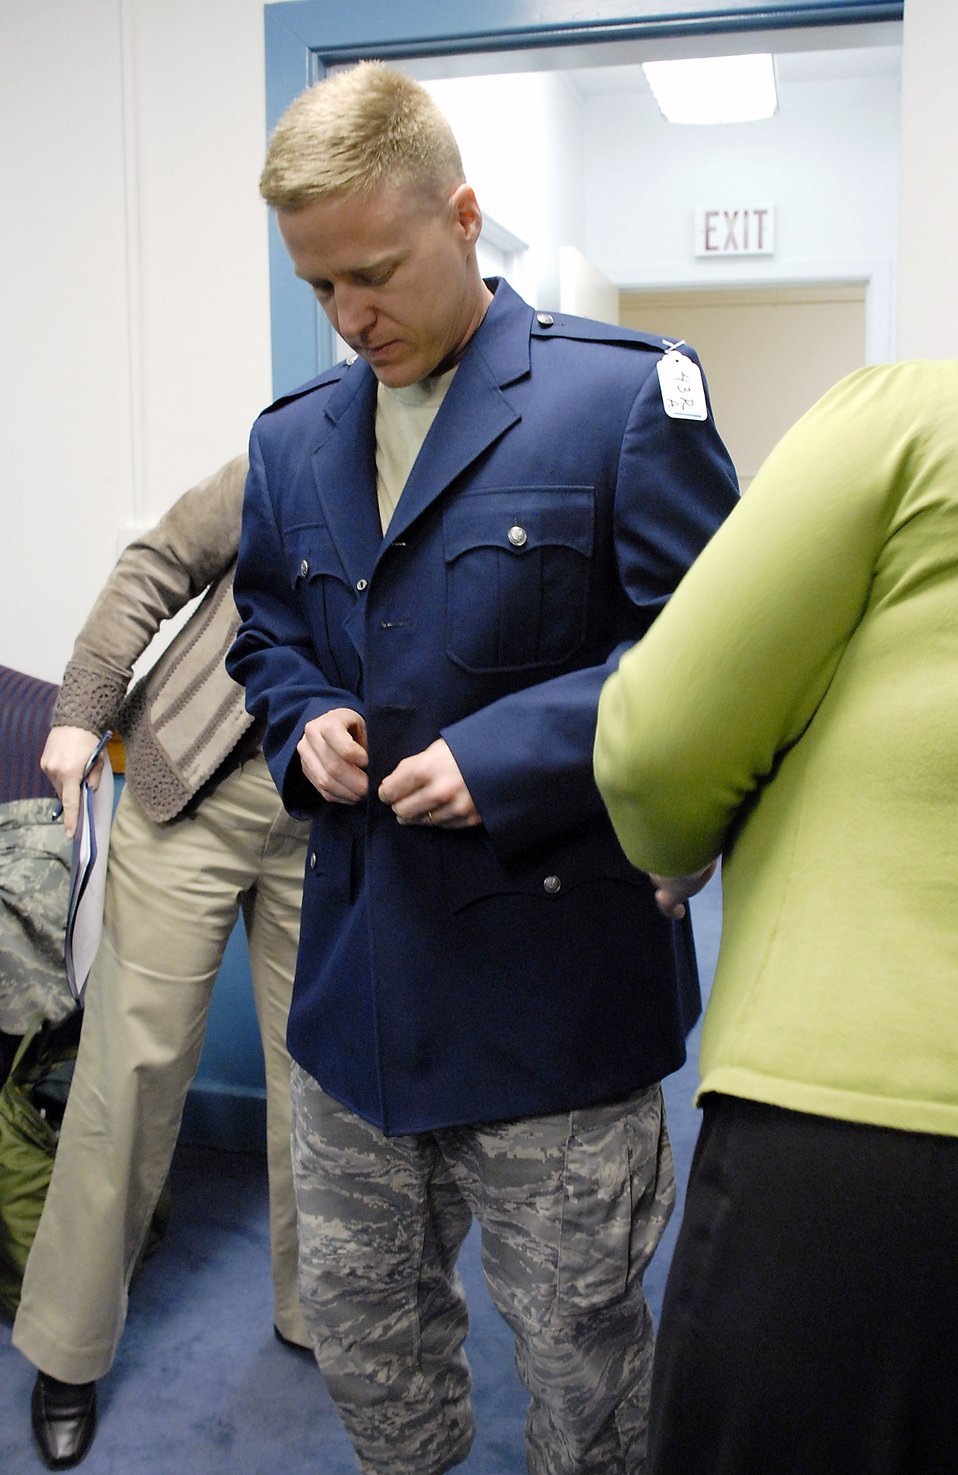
The heritage look

Lt. Col. Jeff Yocum tries on a heritage coat during a fit/wear test April 8 at the Pentagon. Measurements from various Airmen were collected by members of the Air Force Uniform Program Office so any fit adjustments can be made before the heritage service coats get field tested throughout the Air Force. Colonel Yocum is the Air Force chief of staff manpower and personnel executive officer.